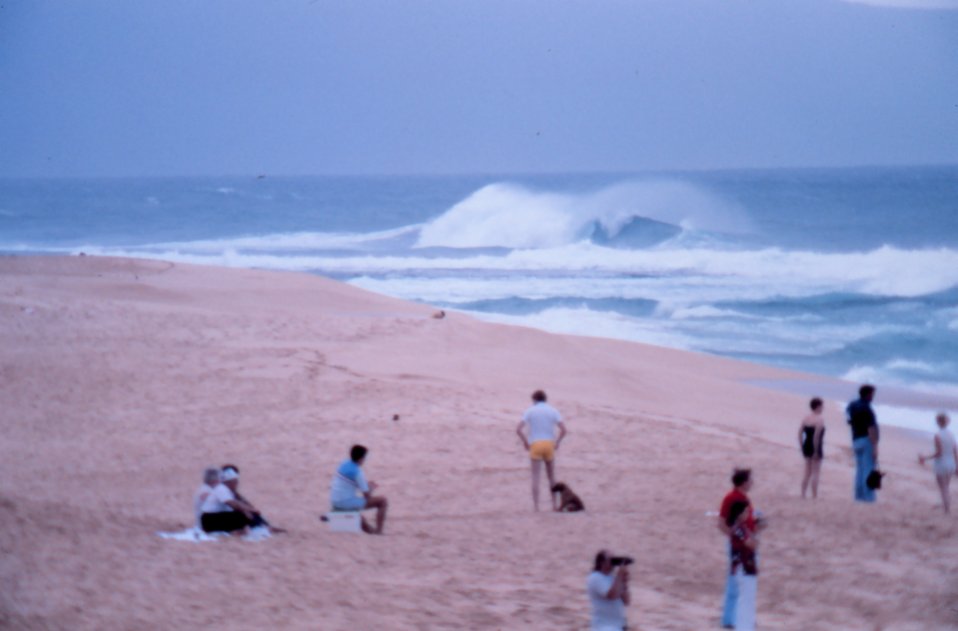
Large surf breaking on the North Shore of Oahu